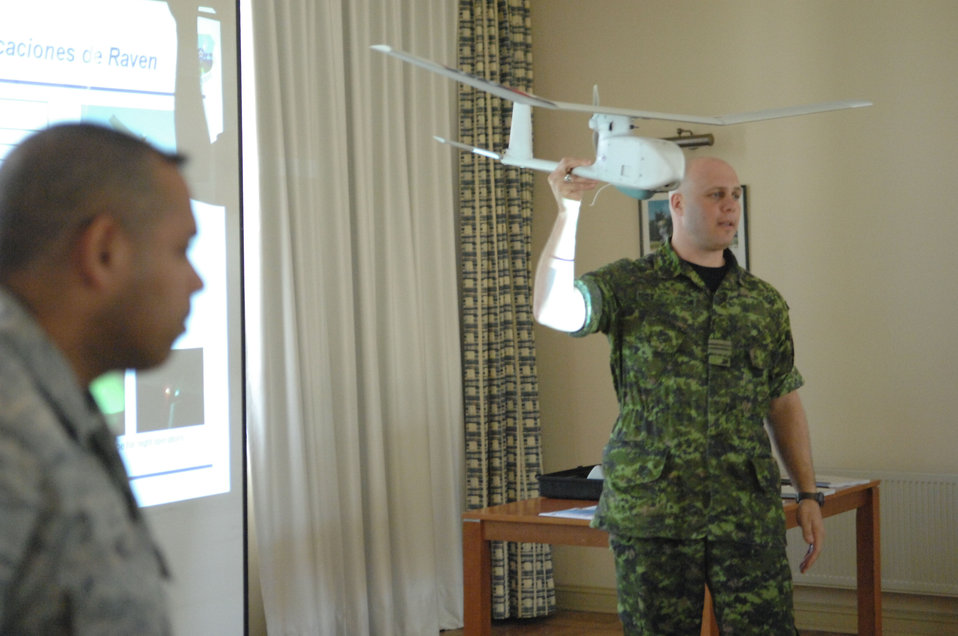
Operation Southern Partner

Canadian army Maj. Brian Nekurak (right) an officer in the foreign exchange program, demonstrates the use and capabilities of the small, unmanned aerial system Oct. 29 while Master Sgt. Edward Nin translates Major Nekurak's words into Spanish at Quintero Air Base, Chile during Operation Southern Partner. Operation Southern Partner is an in-depth, two-week subject matter exchange emphasizing partnership, cooperation and sharing of information with partner nation Air Forces in Latin America.